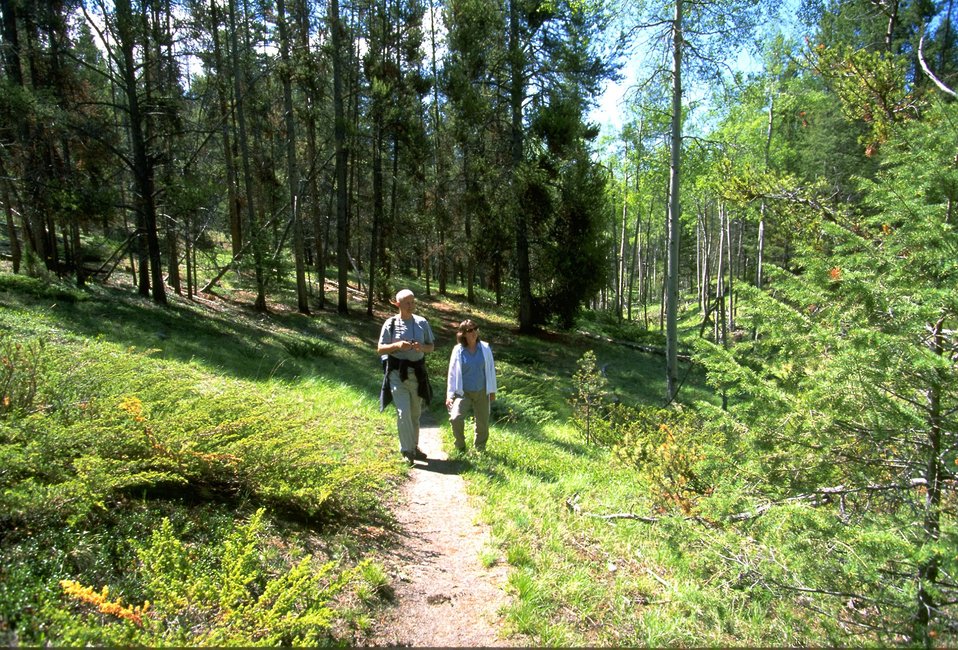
People on a wilderness trail